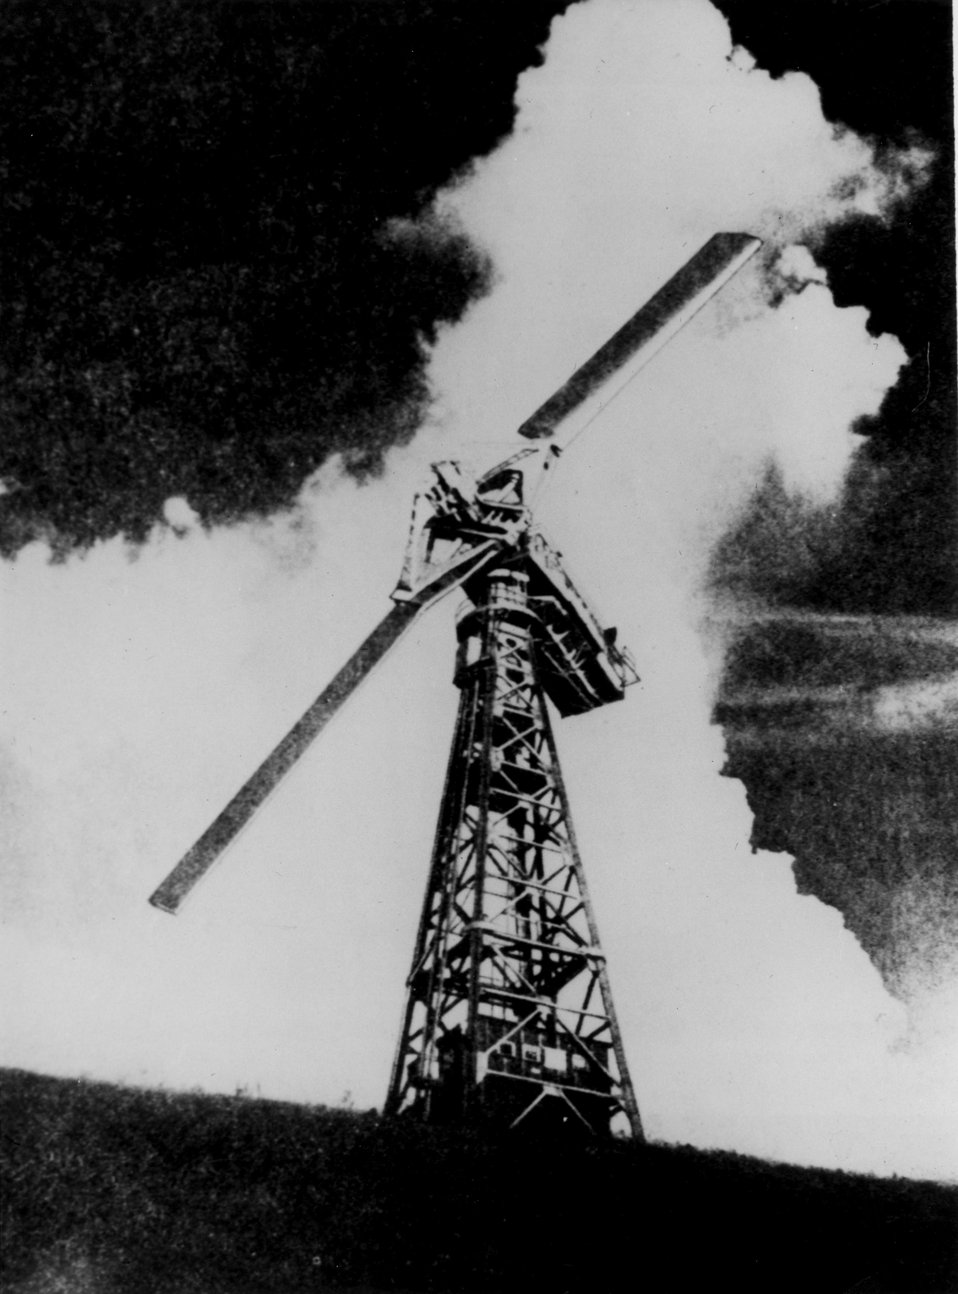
The largest wind turbine in history was the Smith-Putnam wind generator, constructed more than thirty years ago in Vermont. c. 1977